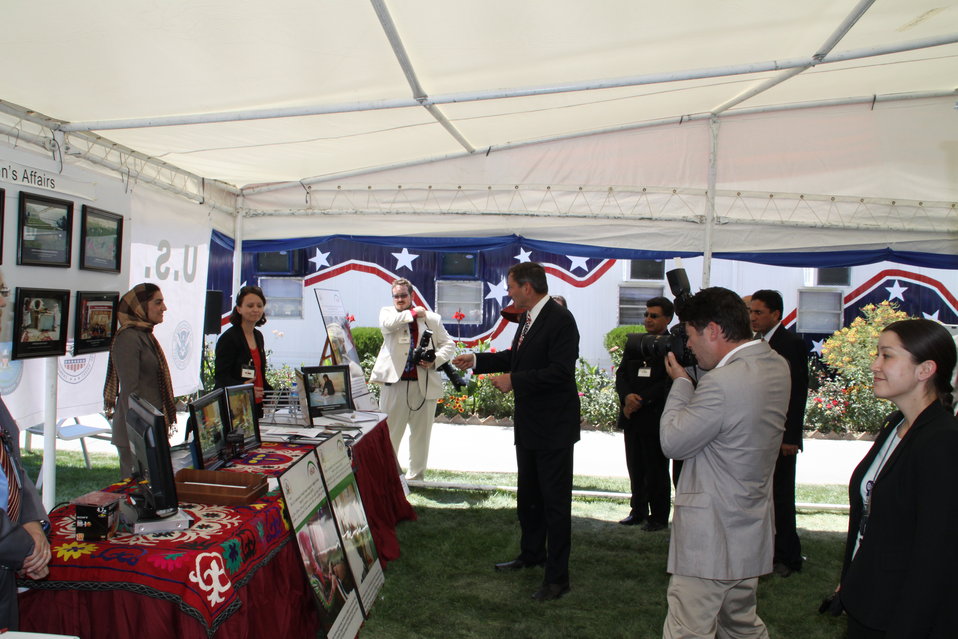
Kabul Official July 4th Celebration